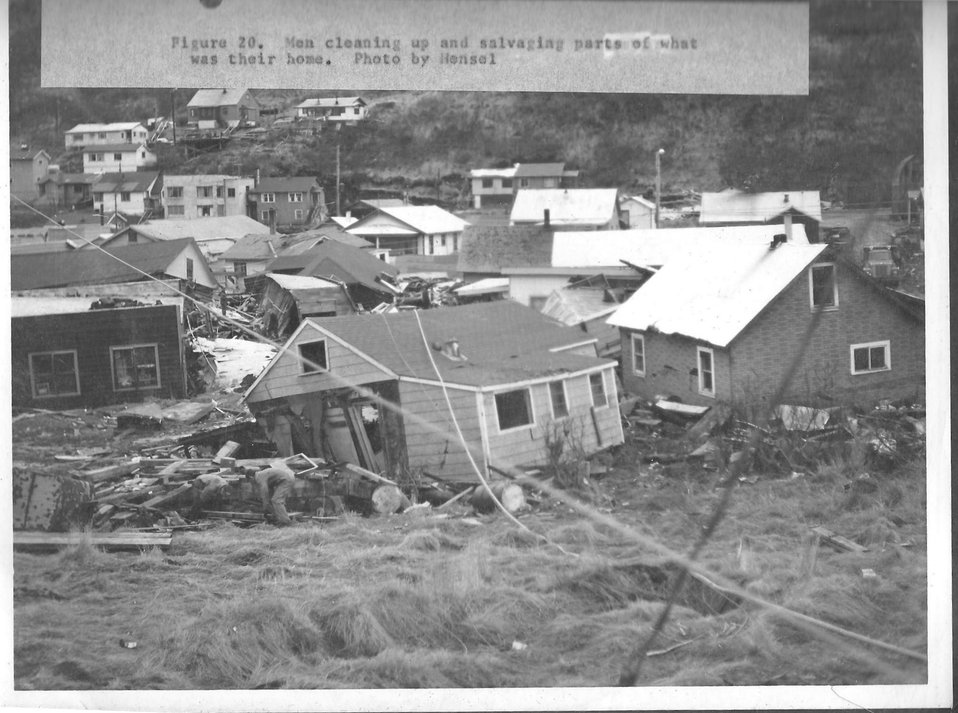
(1964) Tsunami Aftermath

Credit: USFWS

Source and Contact: Kodiak National Wildlife Refuge